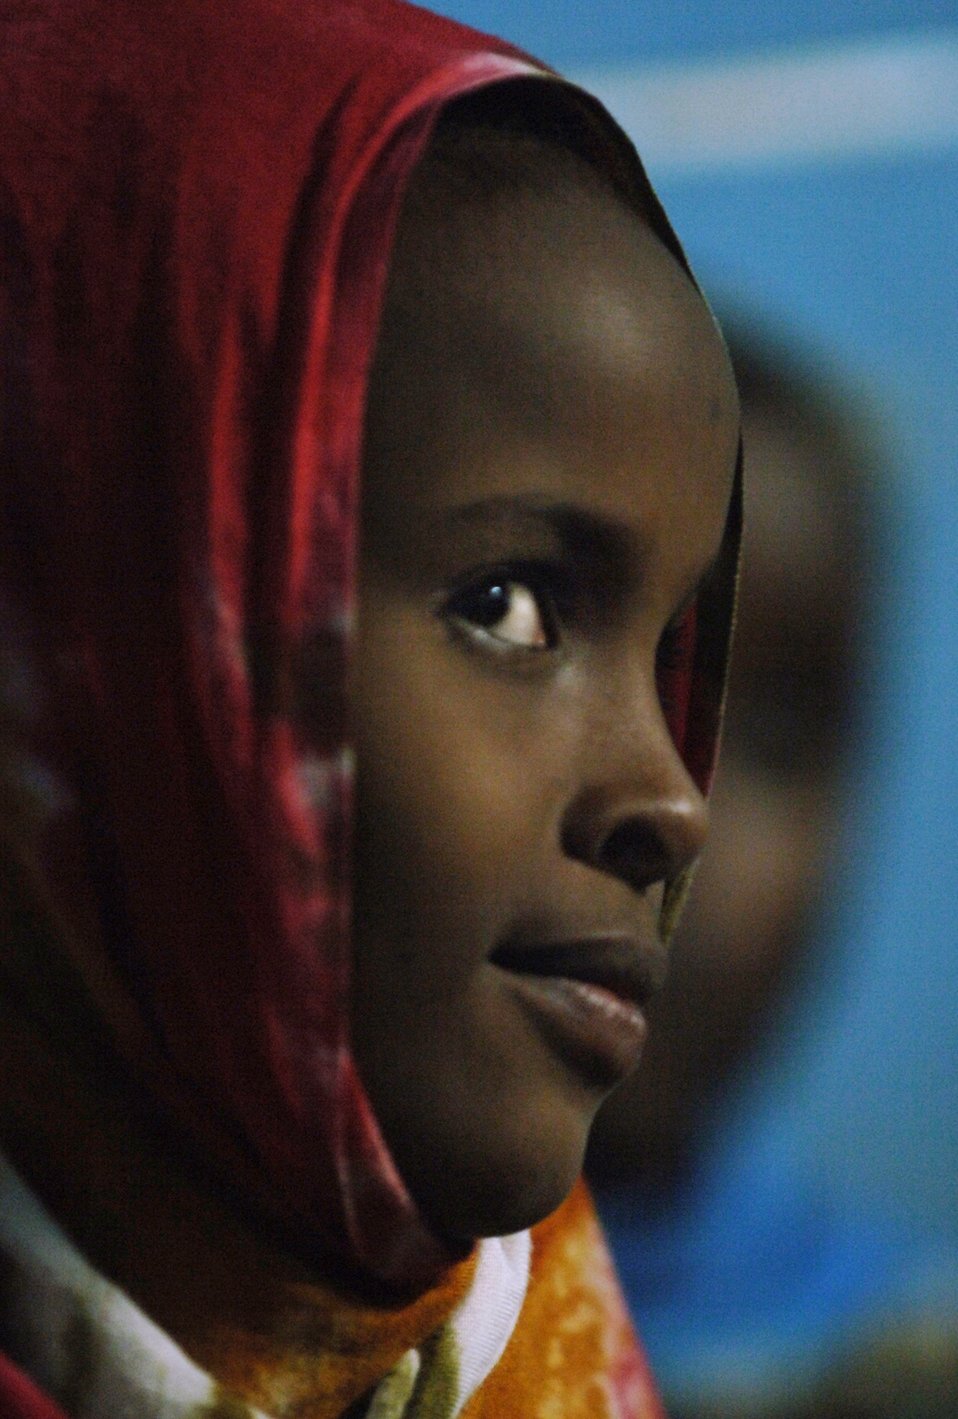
Americans, Djiboutians build relationships

A Djiboutian student at the Horsed Private School of English listens to a U.S. servicemember deployed to Camp Lemonier, Djibouti, answer a question about American culture and immigration.